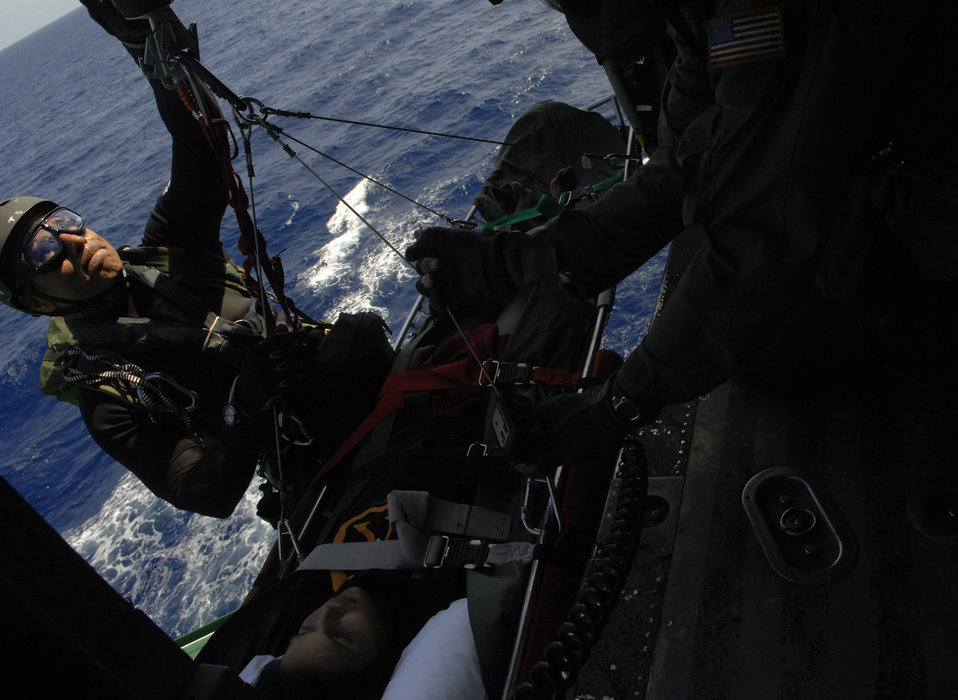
Safe and sound

During a search and rescue mission south of New Orleans, Tech. Sgt. Lem Torres hoists up a survivor April 25. Responding to a U.S. Coast Guard request, two HH-60G Pave Hawk helicopters and a HC-130P performed a 10-hour mission to retrieve stranded boaters that had been picked up by a passing ship.